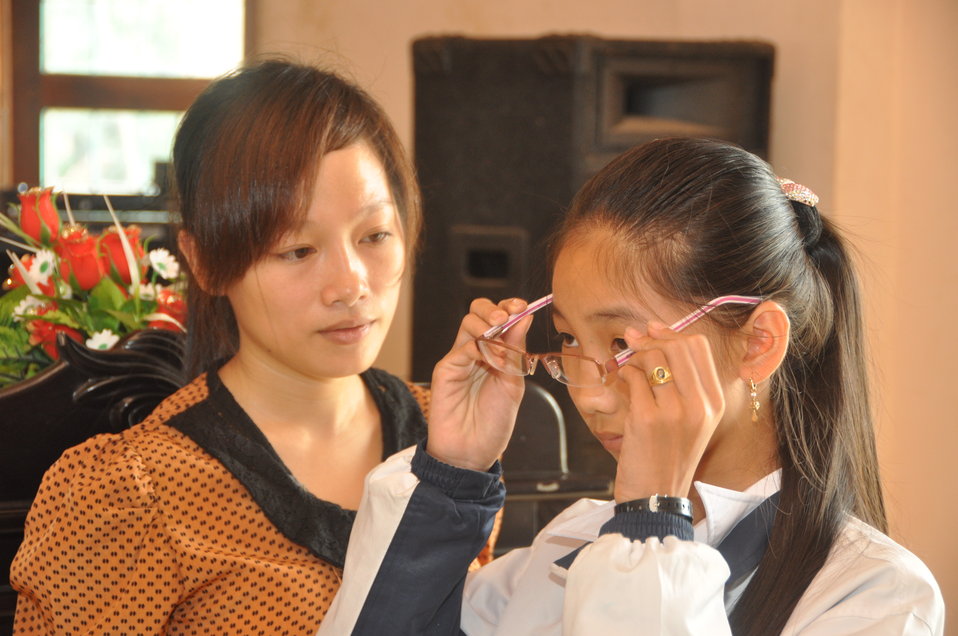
School children in Dak To, Kon Tum Province, receive eyeglasses under a program supported by USAID and partners HKI and World Learning